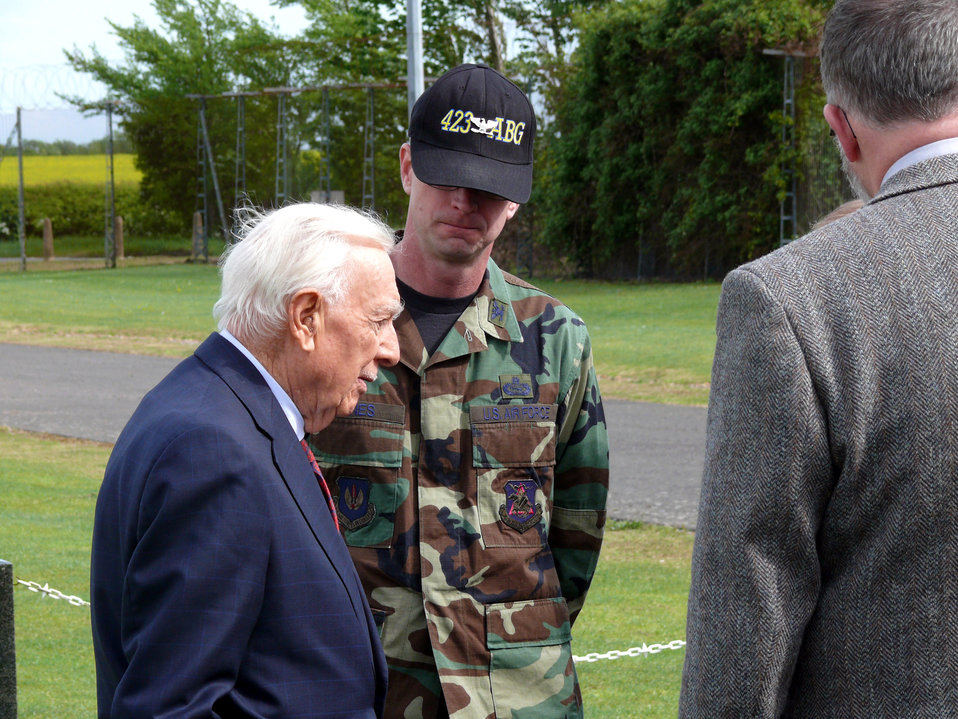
Legendary journalist visits Air Force base in England

Walter Cronkite talks to Col. Jack Jones in front of the 303rd Bomb Group Memorial just outside the main gate May 29 at Royal Air Force Molesworth, England. Colonel Jones is the 423rd Air Base Group commander.